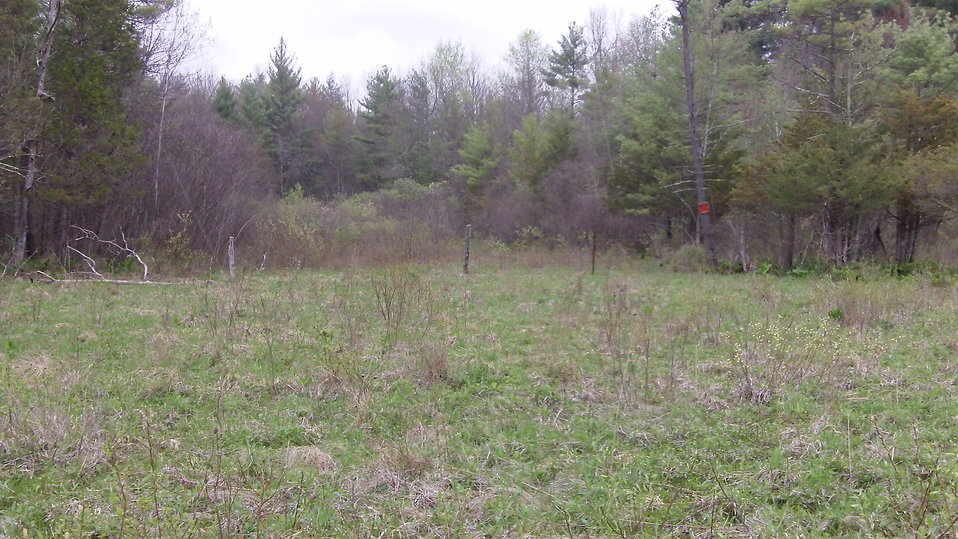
New England cottontail habitat

Habitat management for the cottontail is aimed at creating large patches, ideally more than 25 acres, of high density shrubs and young trees connected to other patches of suitable habitat.